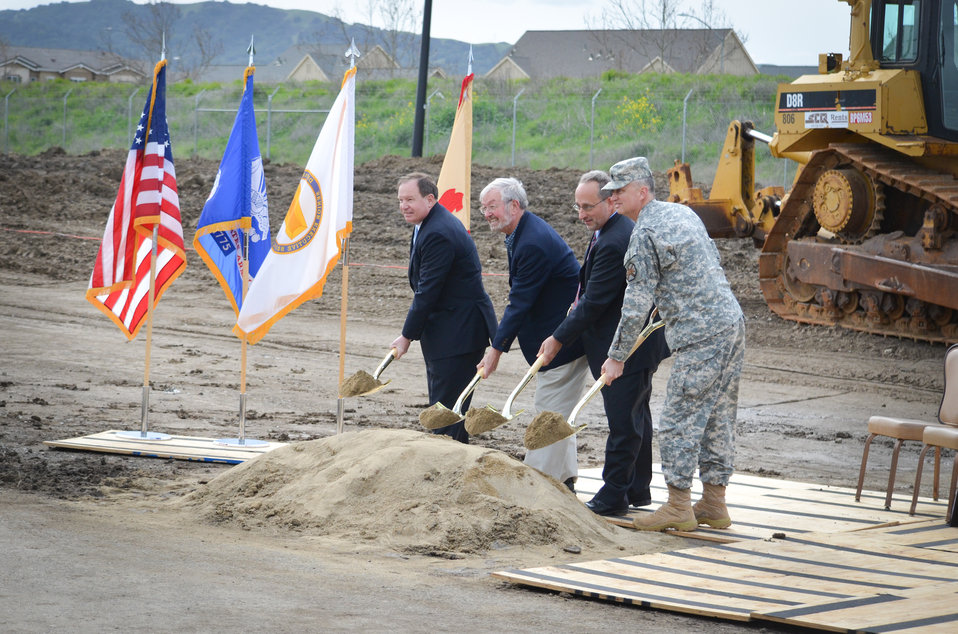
Breaking ground at Camp Parks

(From left) Mr. Addison 'Tad' Davis, Mr. Don Biddle, Mr. Joe Guerra, and Lt. Col. (P) David James break ground during a ceremony March 6, 2013 commemorating the first of six phases of construction at U.S. Army Garrison Camp Parks Reserve Training center in Dublin, Calif.
The U.S. Army Corps of Engineers Sacramento District's real estate office is overseeing a 180-acre transfer of land in exchange for an estimated $66 million in modern facilities for Camp Parks over the next several years—the largest Army Reserve real property exchange agreement in Department of Defense history.